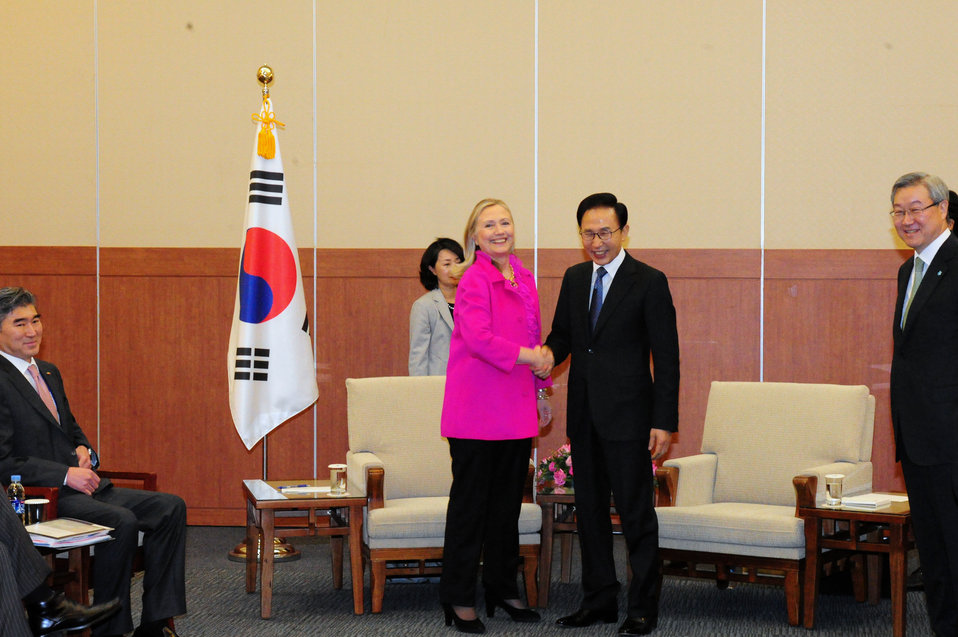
Secretary Clinton Meets With South Korean President Lee

U.S. Secretary of State Hillary Rodham Clinton meets with Republic of Korea President Lee Myung-bak in Busan, South Korea, on November 30, 2011.